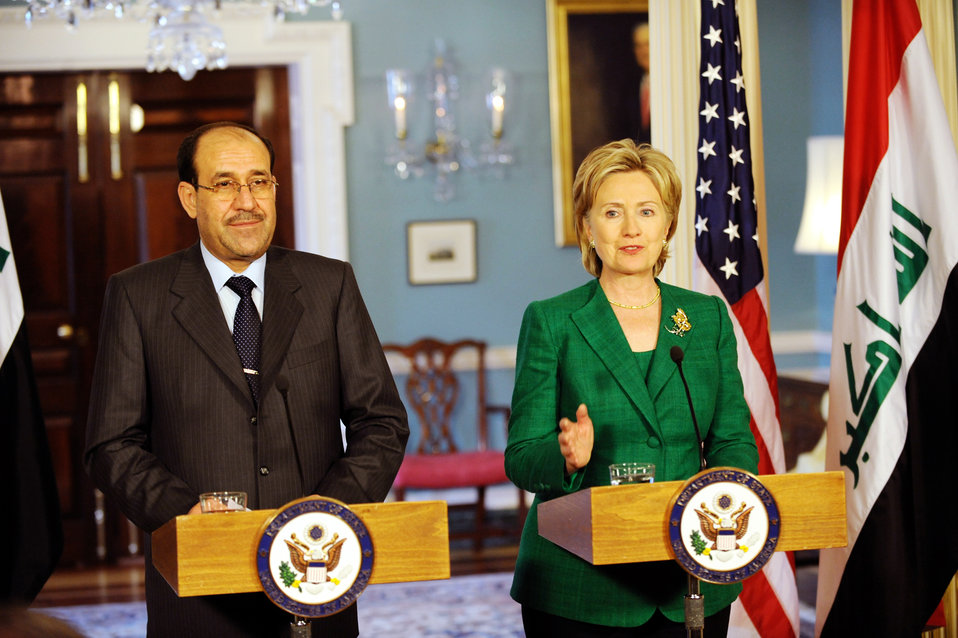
Secretary Clinton Holds Bilarteral Meeting with Iraqi Prime Minister

U.S. Secretary of State Hillary Rodham Clinton holds a press availability with His Excellency Nouri al-Maliki, Prime Minister of the Republic of Iraq at the U.S. Department of State in Washington, DC July 24, 2009.